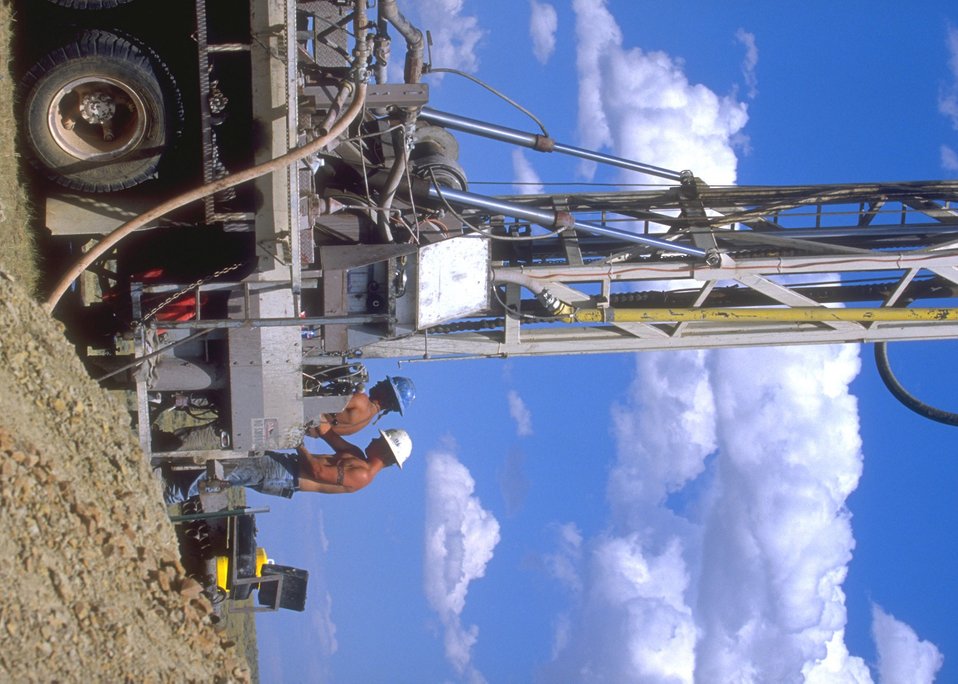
Drill site for coal bed methane, Buffalo Field Office.